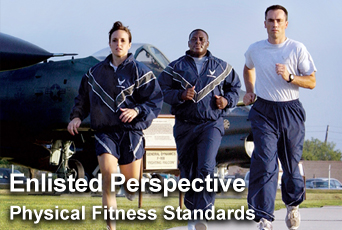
'Perspective' discusses physical fitness standards

In the newest